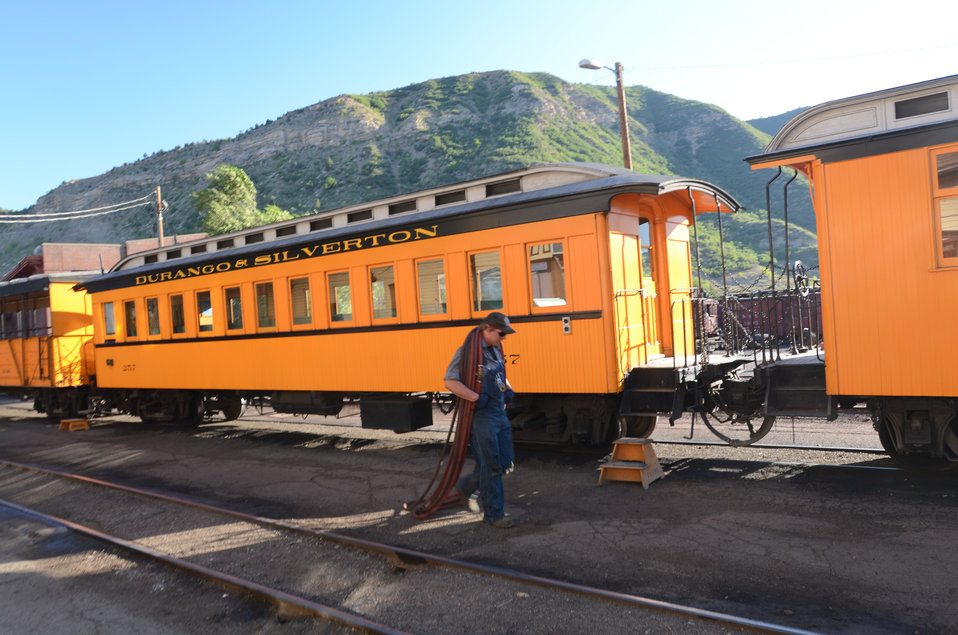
Durango, Colorado is in a historic mining area; now a destination location featuring the Durango & Silverton Narrow Gauge Railroad depot and other economic providers. Natural resources surround the area. It is home to more than 17,000 people.